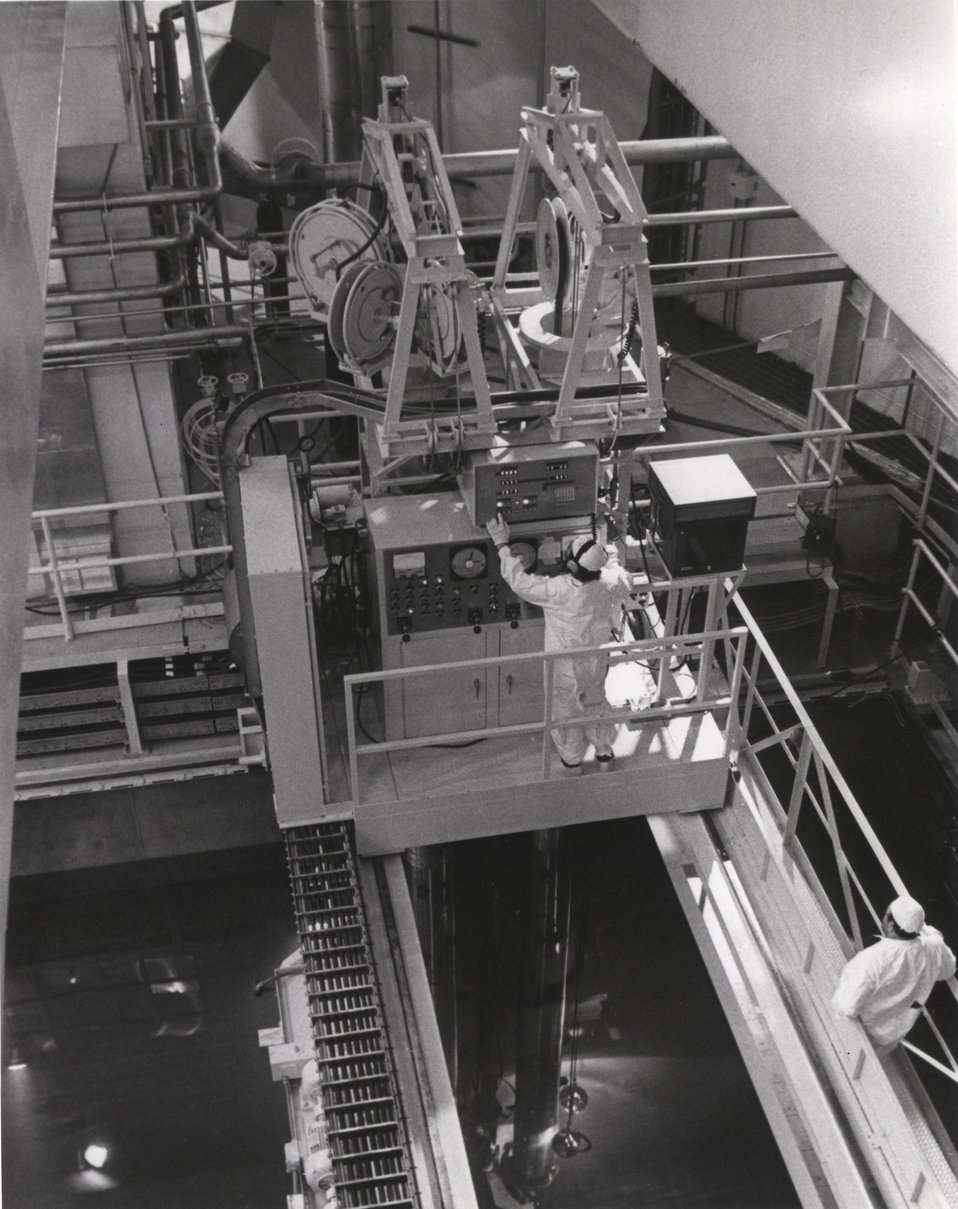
Fuel loading operation at Oconee Nuclear Station Unit No. 2 near Seneca, South Carolina. Circa 1974.